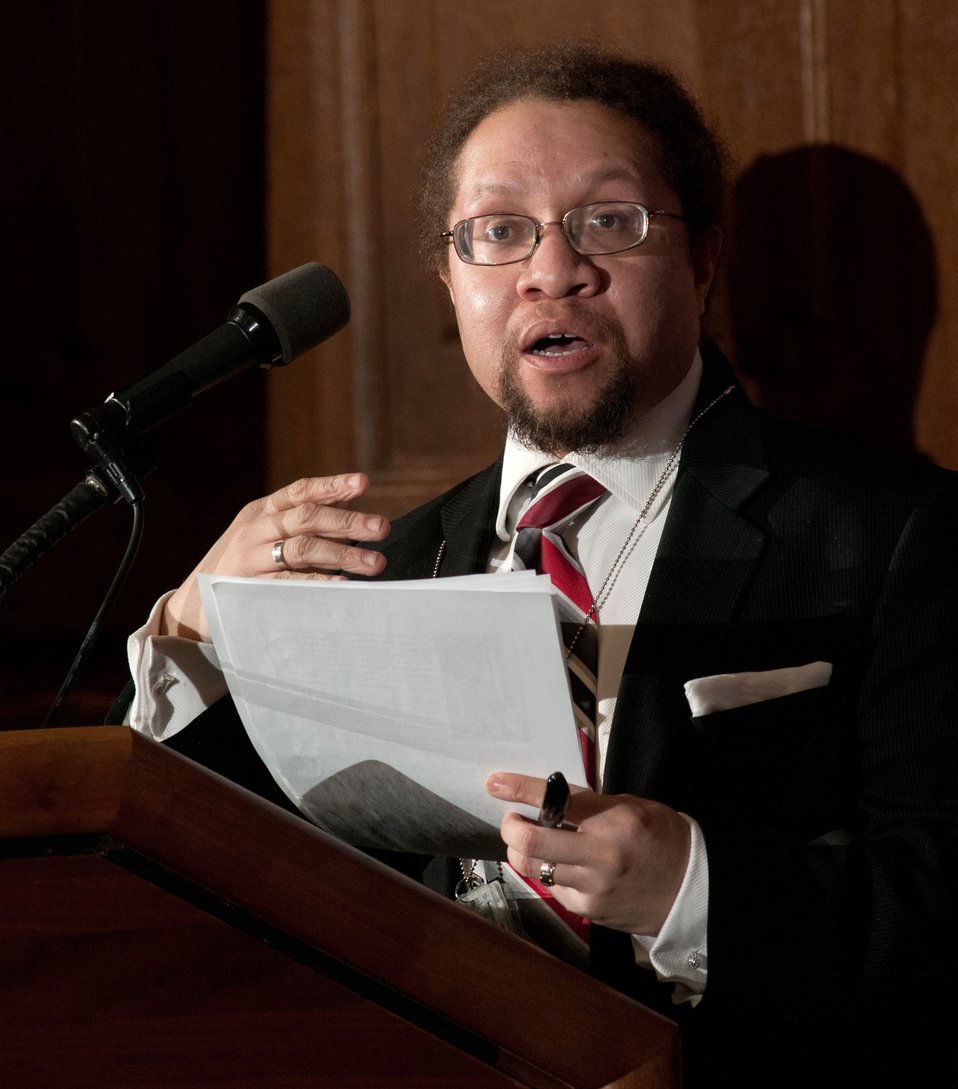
United States Department of Labor Office of Disability Employment Policy, Policy Advisor Patrick Cokley introduced and moderated the panel discussion during the Work Force Recruitment Program’s (WRP) “Your Key To Hiring Student Interns and Employees with Disabilities” event hosted by the United States Department of Agriculture (USDA) and held in the Jefferson Auditorium, in Washington, D.C. on Tuesday, February 7, 2012.